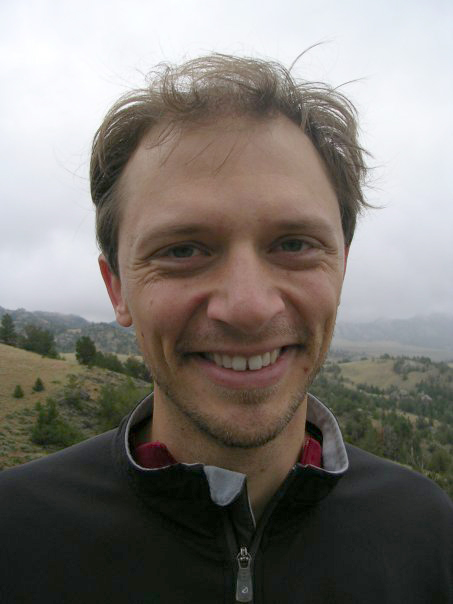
Pecase Award Winner

Daniel S. Hussey